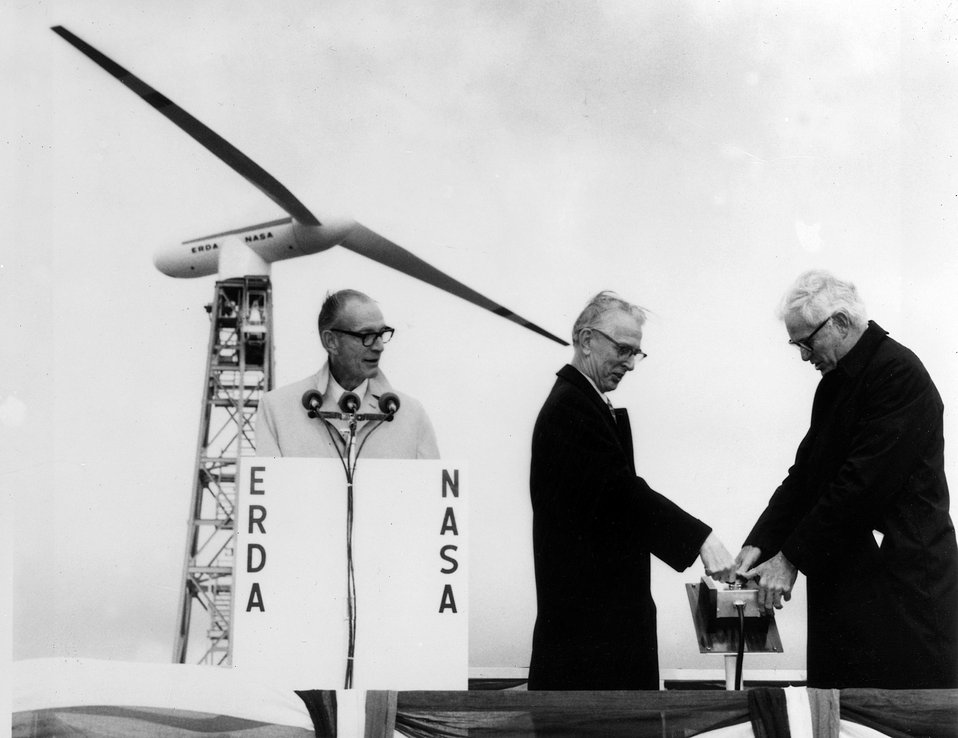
A newly dedicated 100 kilowatt wind turbine at Sandusky, Ohio, is using fall winds to generate data on operating and economic characteristics of wind energy systems for the generation of electric power. c. 1975